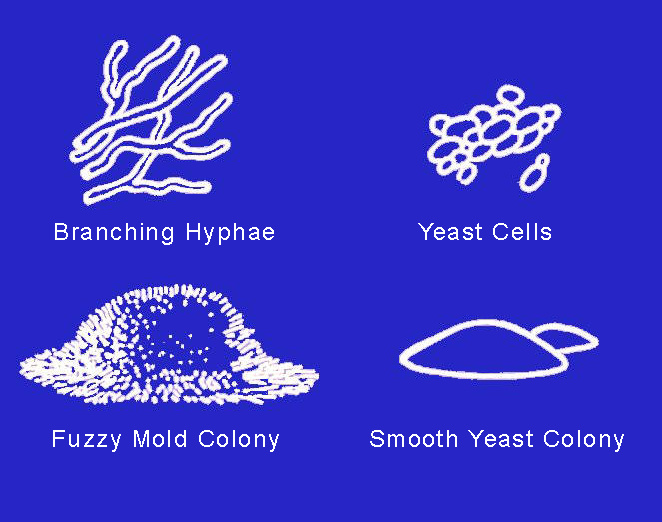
Illustration showing fuzzy mold colony and smooth yeast colony.